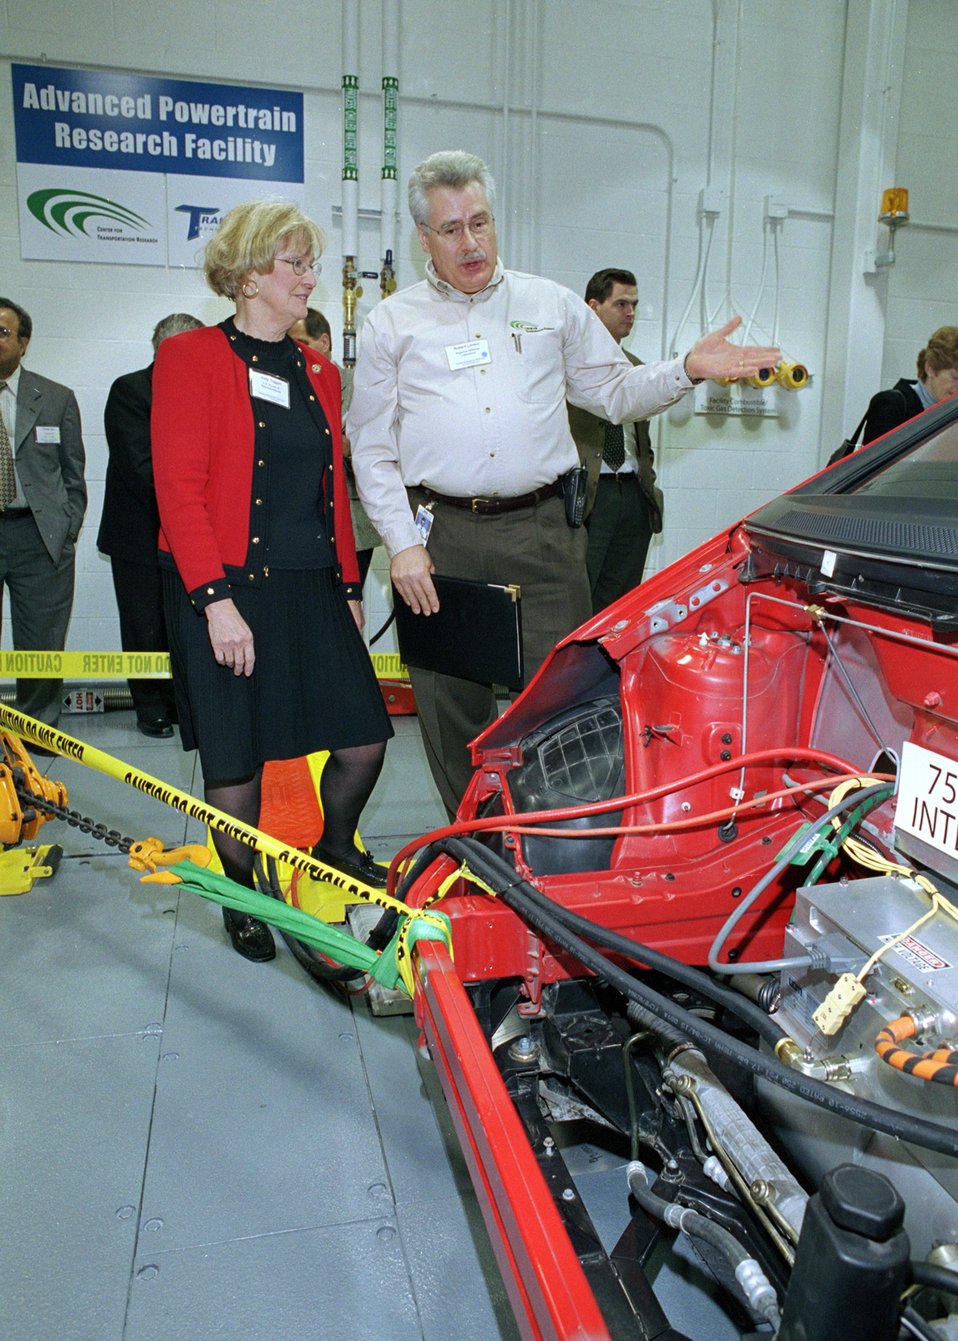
ROBERT LARSEN, DIRECTOR, ARGONNE NATIONAL LABORATORY'S CENTER FOR TRANSPORTATION RESEARCH, SHOWS CONGRESSWOMAN JUDY BIGGERT THE FOUR WHEEL DRIVE DYNAMOMETER SYSTEM IN THE ADVANCED POWERTRAIN RESEARCH FACILITY.

ANL'S ADVANCED POWERTRAIN RESEARCH FACILITY WAS DEDICATED ON NOVEMBER 15, 2002. IT WAS DESIGNED TO ENHANCE THE DEVELOPMENT OF ADVANCE TECHNOLOGY POWERTRAIN COMPONENTS FOR CARS AND TRUCKS, SUPPORT MODEL DEVELOPMENT AND TEST ADVANCED VEHICLE TECHNOLOGY. IT COMBINES THE BEST AVAILABLE EMISSIONS INSTRUMENTATION WITH A WIDE RANGE OF FUELS, INCLUDING GASOLINE, HYDROGEN, NATURAL GAS AND DIESEL.